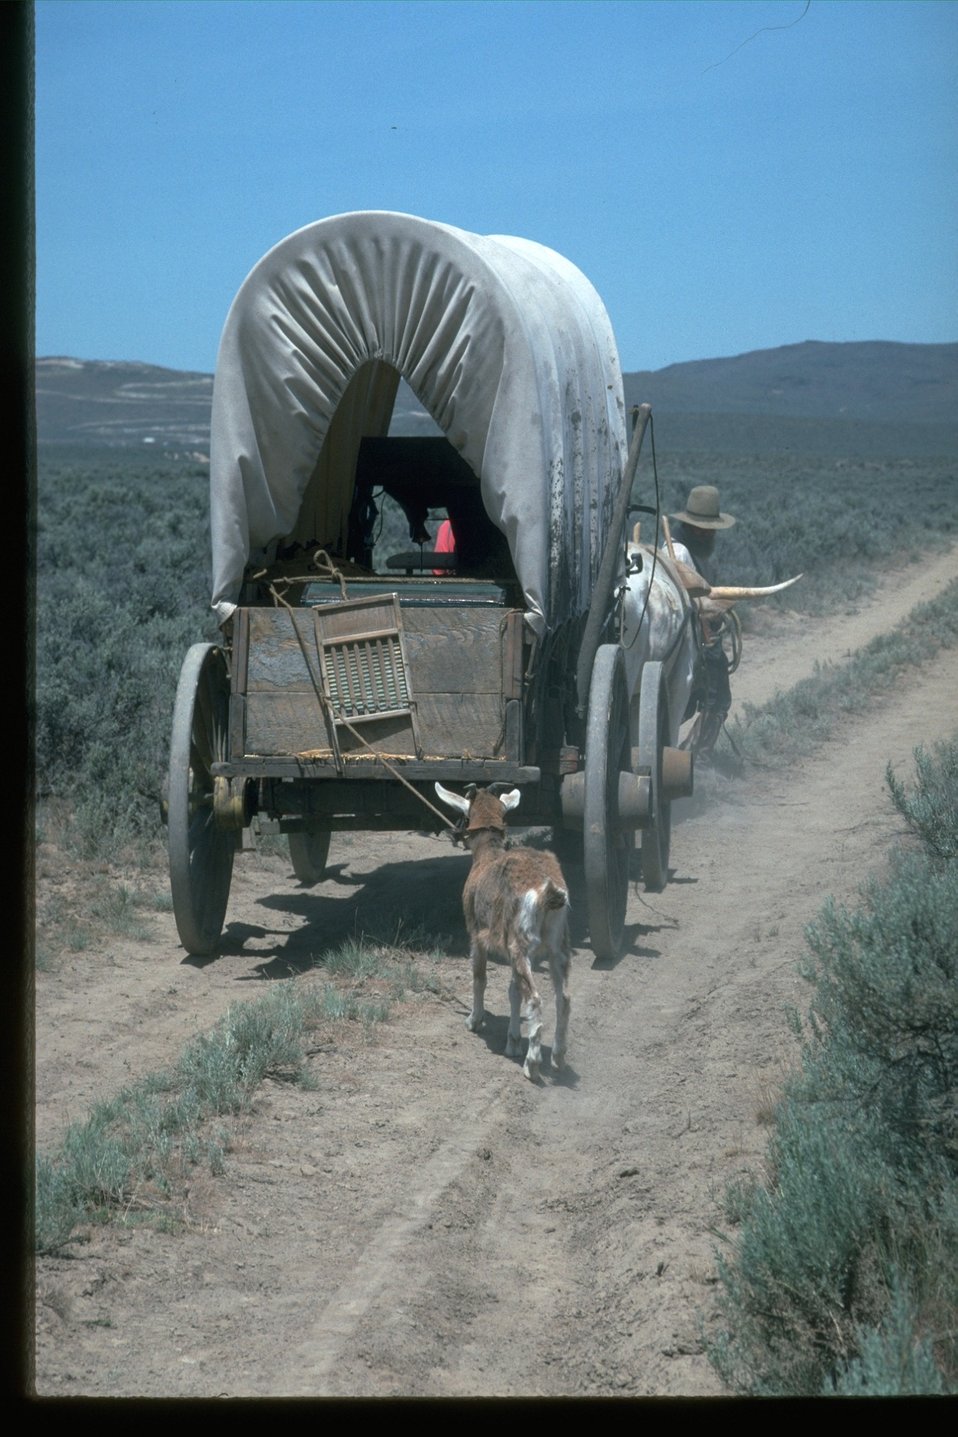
Wagon Train Scene with a goat.